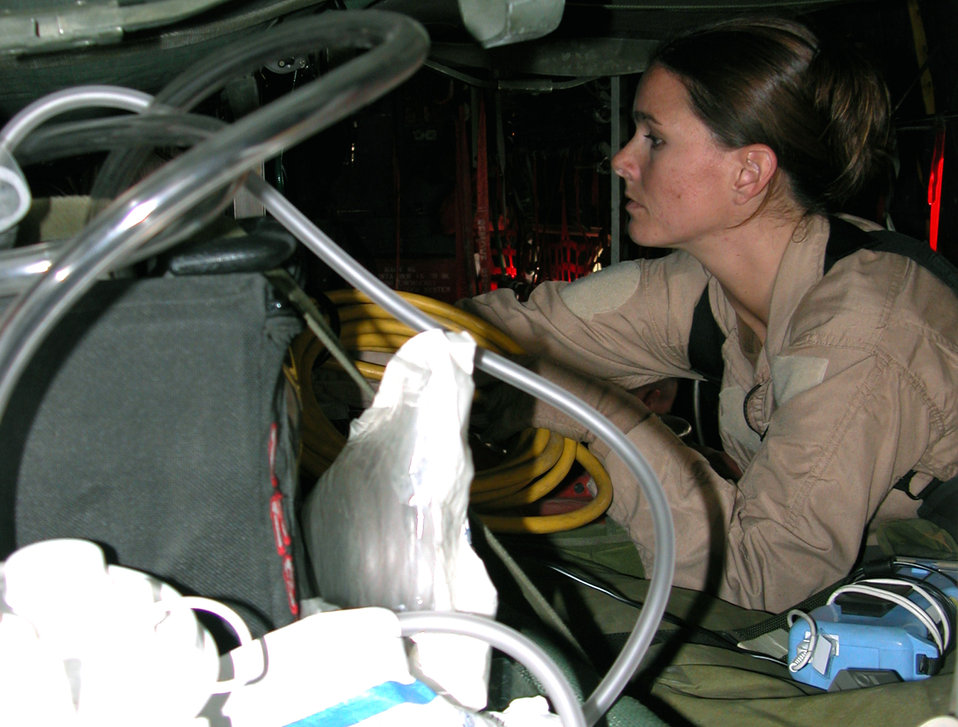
Medics, aircrews work together to save lives

SOUTHWEST ASIA -- Staff Sgt. Jennifer Anthony checks equipment loaded onto a C-130 Hercules at the beginning of an aeromedical-evacuation mission. She is deployed from Scott Air Force Base, Ill.